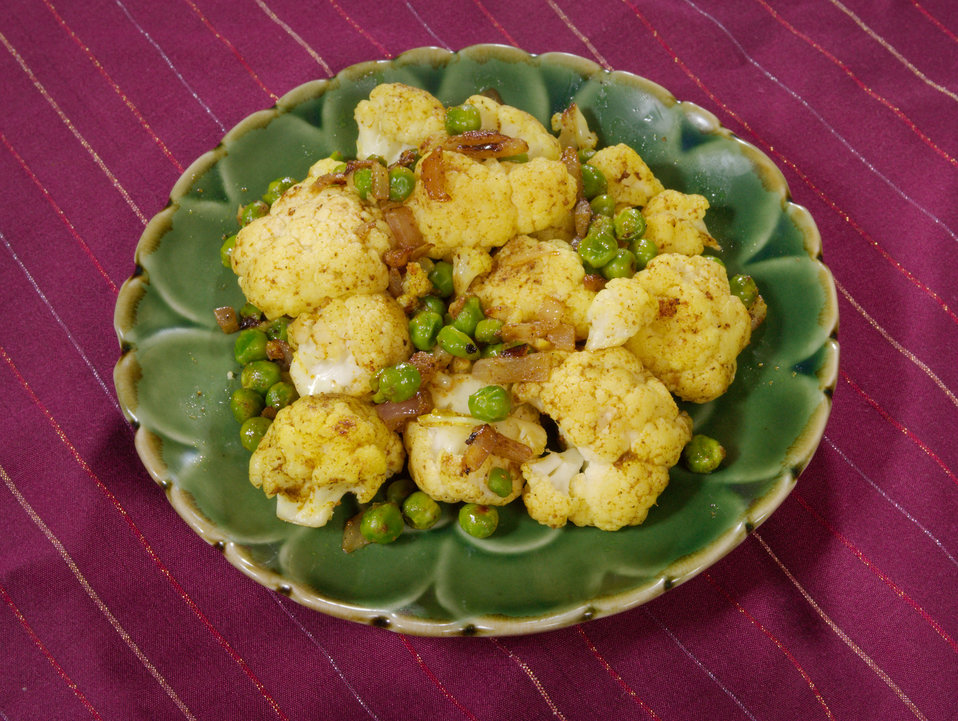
With an exotic twist on a traditional side dish, here we have what's called Curried Cauliflower, and is high in dietary fiber, protein, and vitamin C. The recipe, which may be accessed by way of the link below, is a simple one, calling for only a few ingredients including cauliflower, onion, and green peas, and is seasoned with curry powder, cumin, salt and black pepper.